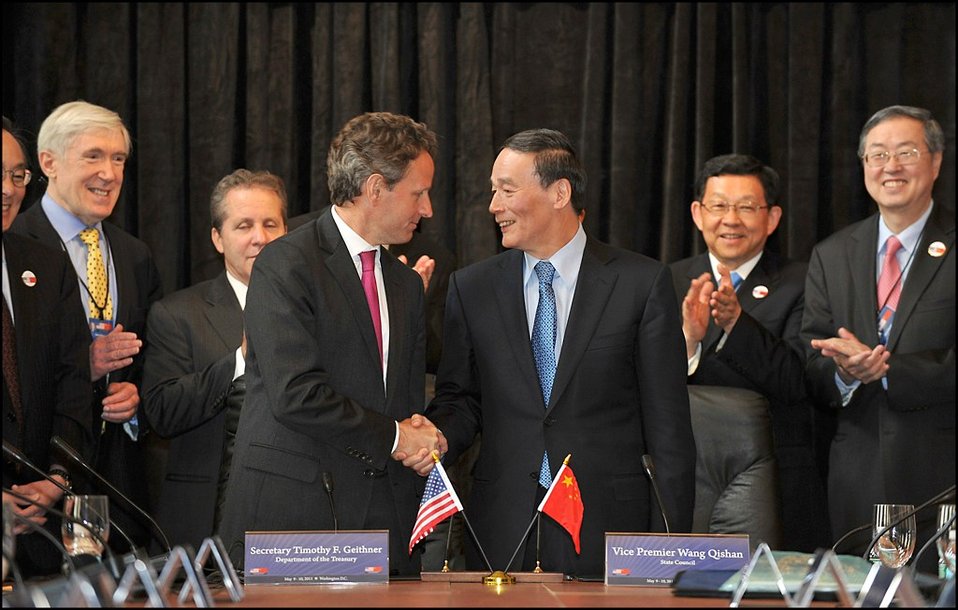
U.S.-China Strategic and Economic Dialogue

Secretary Geithner and Vice Premier Wang after signing the U.S.-China Comprehensive Framework for Promoting Strong, Sustainable and Balanced Growth and Economic Cooperation.